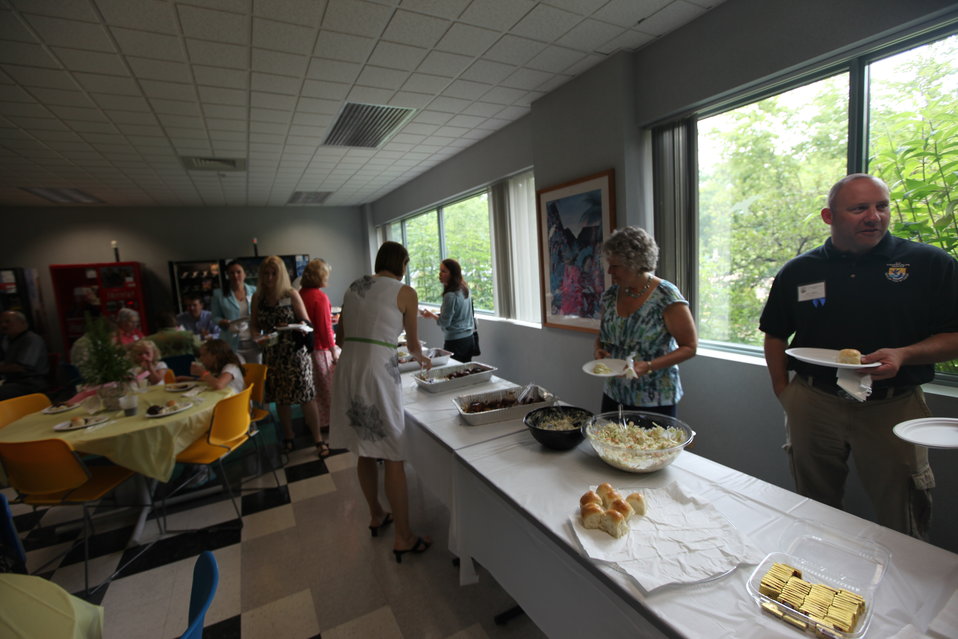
Northeast Region Employee Appreciation Awards

Luncheon